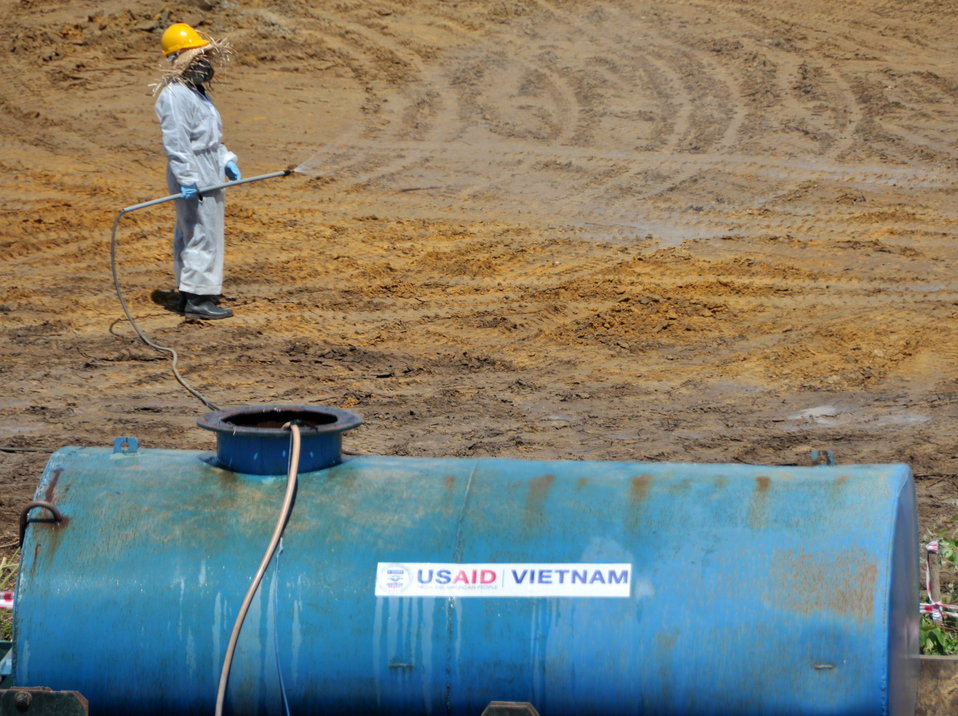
Environmental Remediation Progress at the Danang Airport site

Progress at the Remediation of Dioxin Contamination Project Site

Danang, Vietnam, June 5, 2013